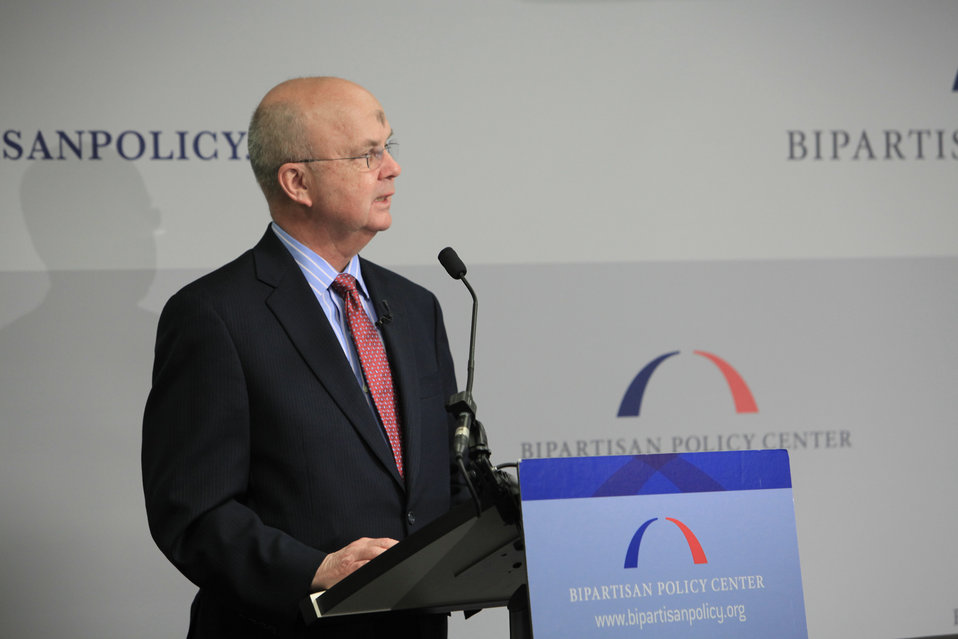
General (Ret.) Michael Hayden introduces FCC Chairman Genachowski

General (Ret.) Michael Hayden, Former Director, CIA and NSA introduces FCC Chairman Genachowski at the Bipartisan Policy Center in Washington, DC, on February 22, 2012.